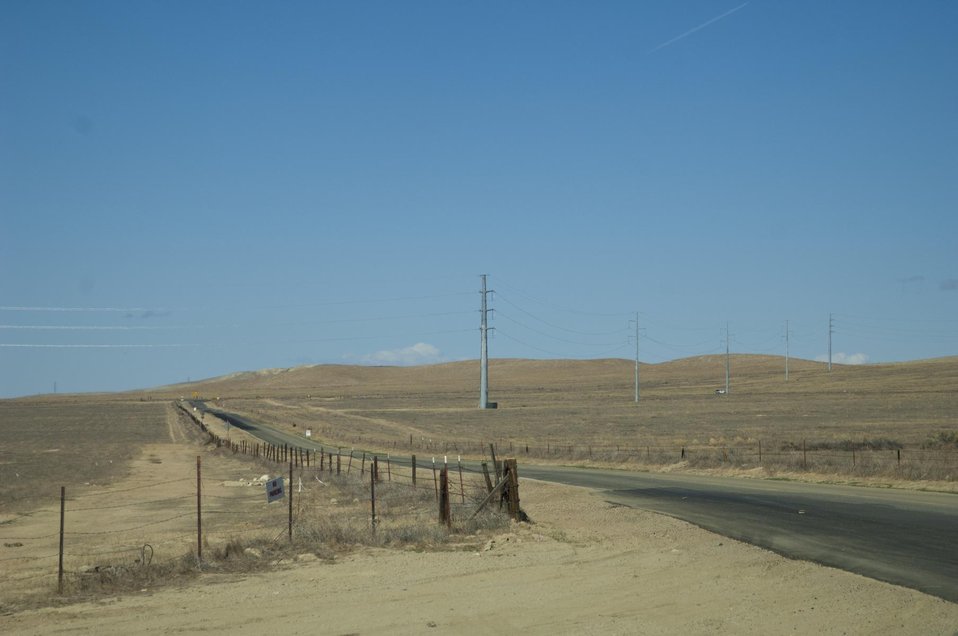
Lonely Road, Carrizo Plain